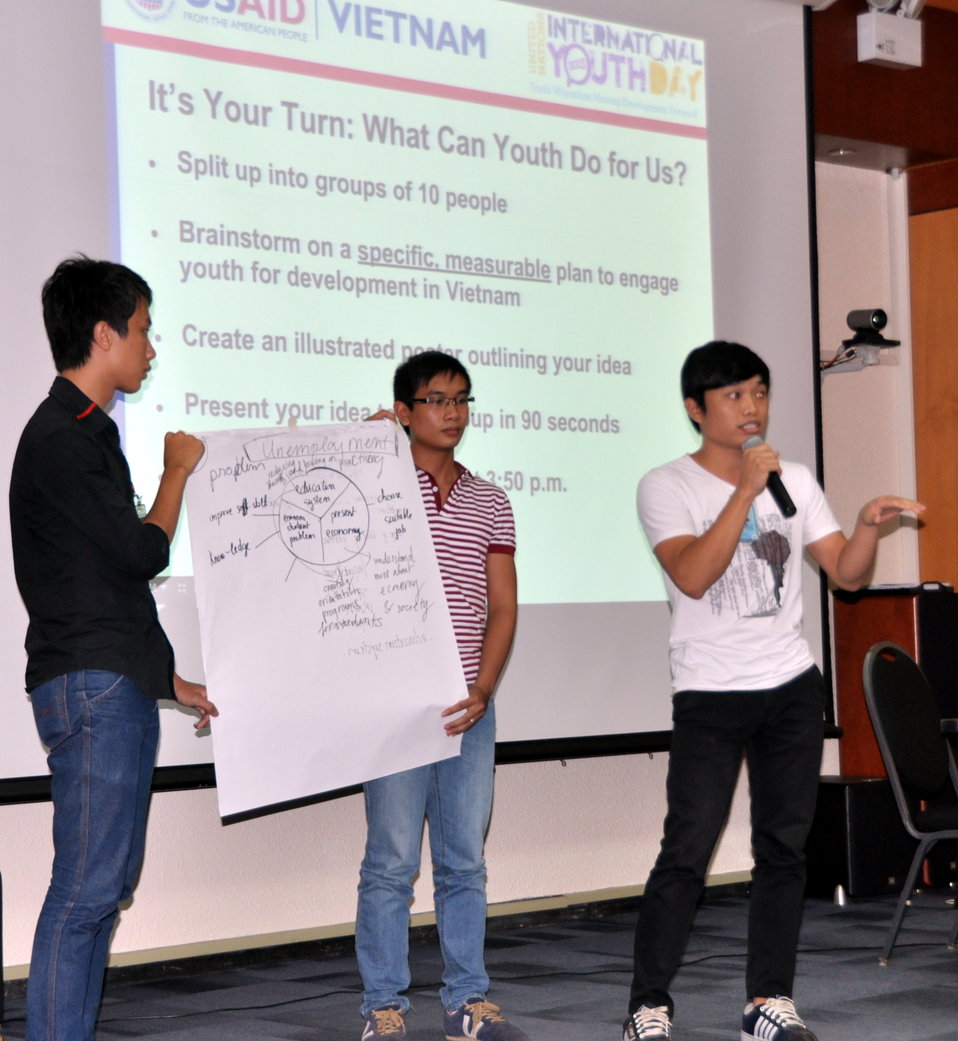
International Youth Day 2013: USAID hosts a lively discussion and group exercise on how youth can join in to advance development

Hanoi, August 12, 2013.